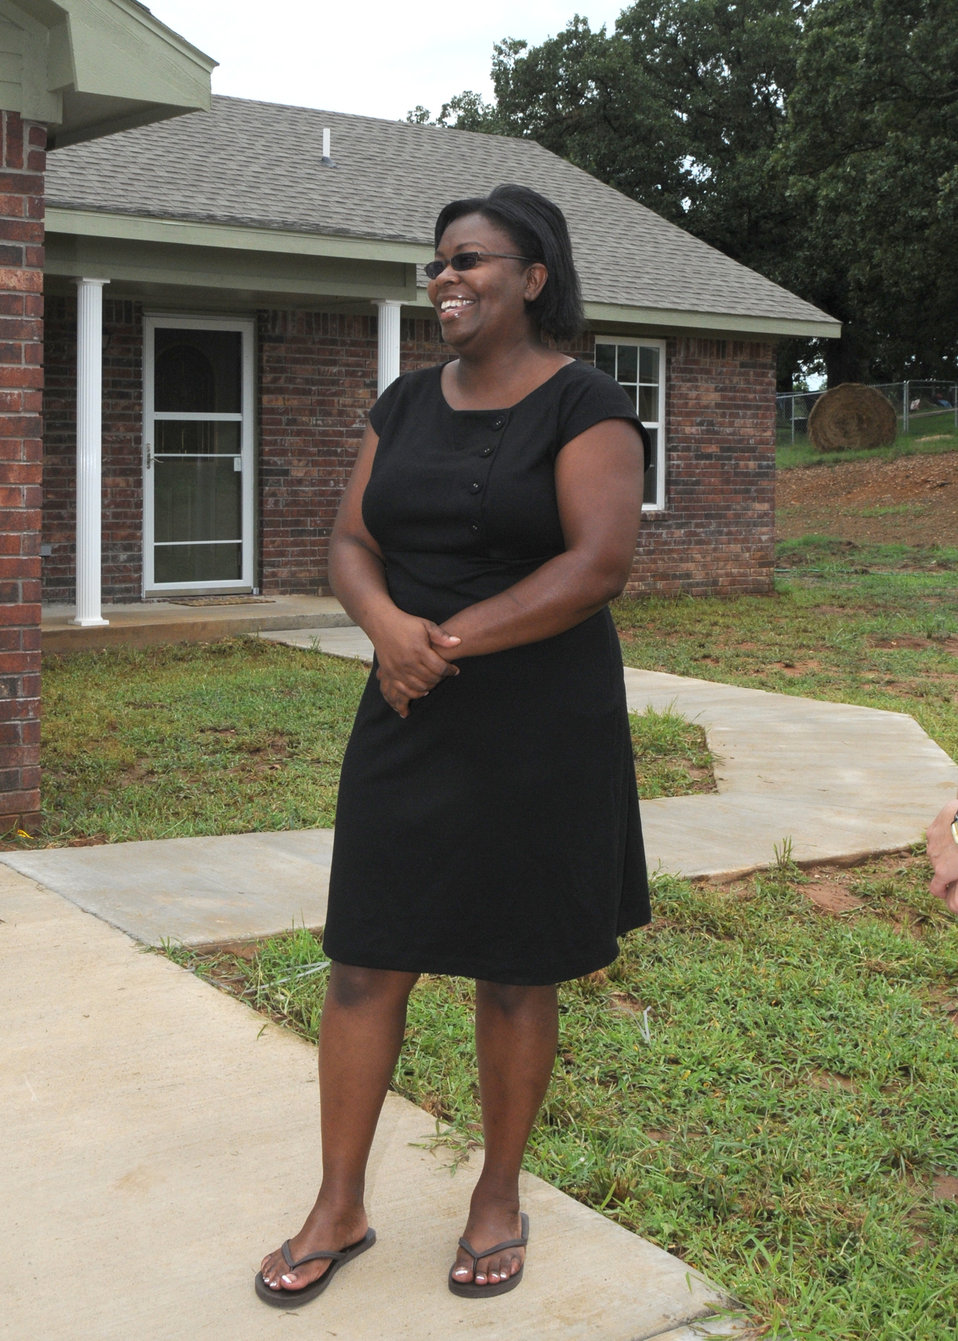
Mrs. Davis is a single mother raising her son and her 2 nephews and a niece. She received a home loan from the U.S. Department of Agriculture Rural Development (RD) agency using funding from the American Recovery and Reinvestment Act (AARA) for a home loan of $98 thousand. She was living in a 2-bedroom ranch and now has a new 4-bedroom home in Fort Coffee, Oklahoma. She works for the Fort Coffee, OK school system and is attending night school to get her teaching degree.